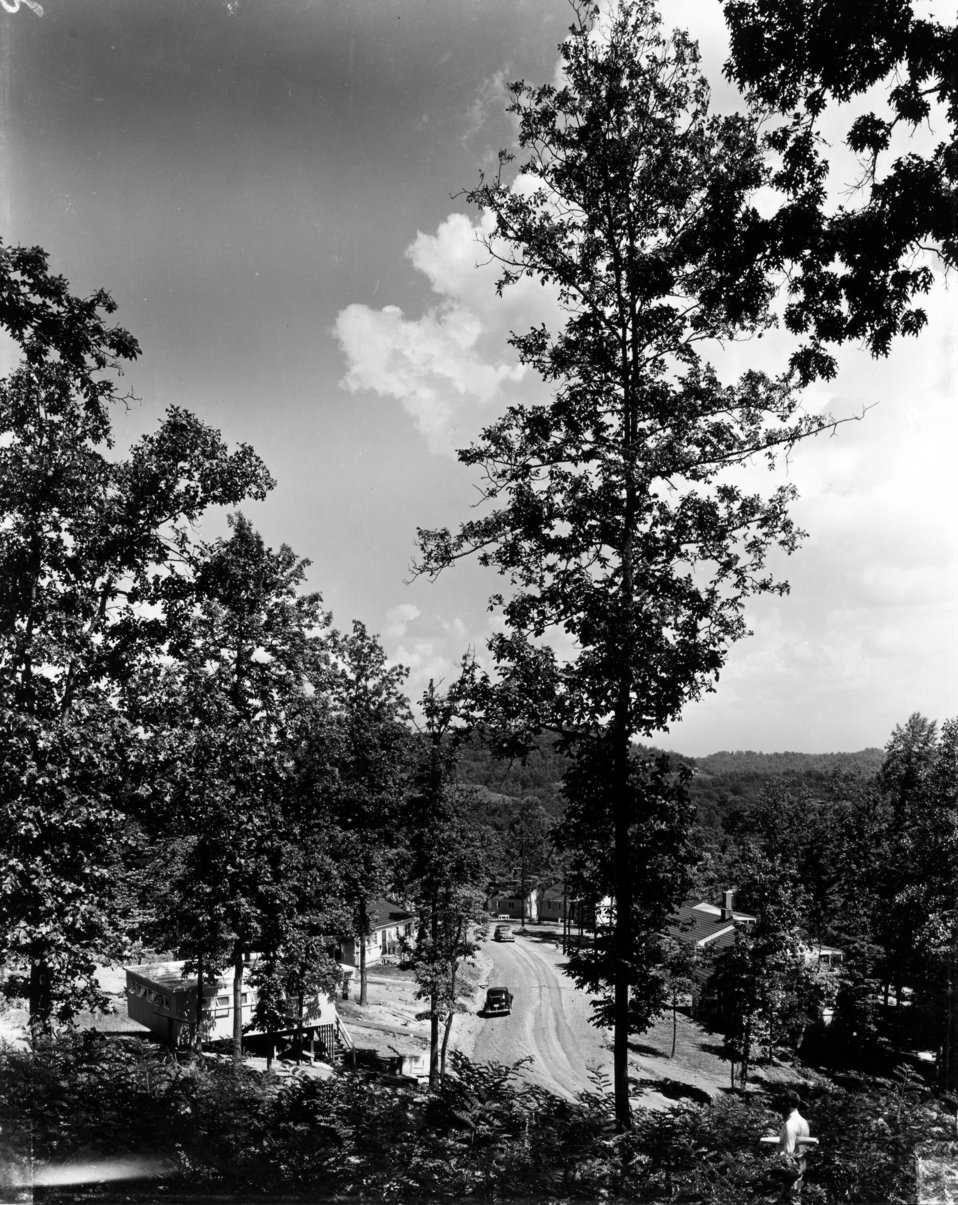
Daily Life at Oak Ridge